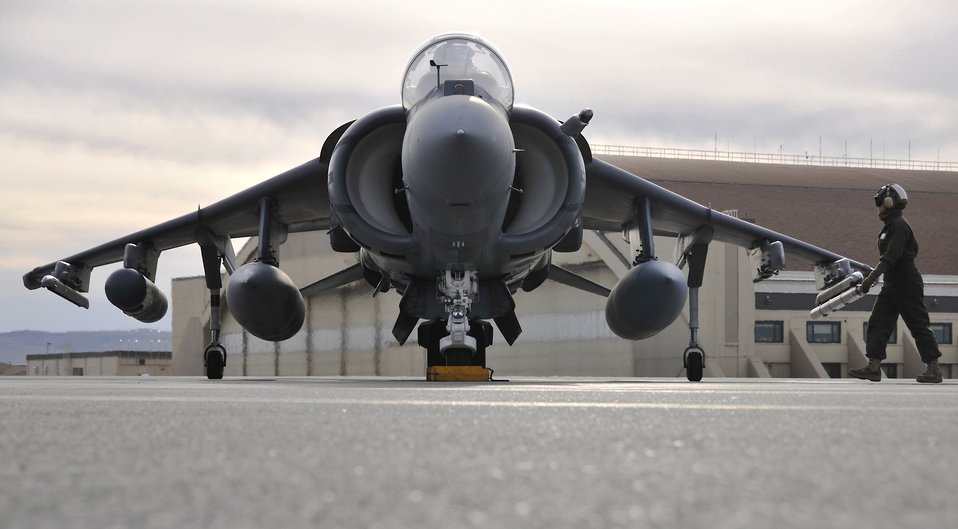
Red Flag-Alaska takes off

U.S. Marine Lance Cpl. Rachelle Carl performs preflight inspections on an AV-8B Harrier during Red Flag-Alaska 10-2, April 19, 2010, at Eielson Air Force Base, Alaska. The exercise is a Pacific Air Forces-directed field training exercise for United States and coalition forces under simulated combat conditions. Corporal Carl is assigned to VMA-211, at Marine Corps Air Station Yuma, Ariz.